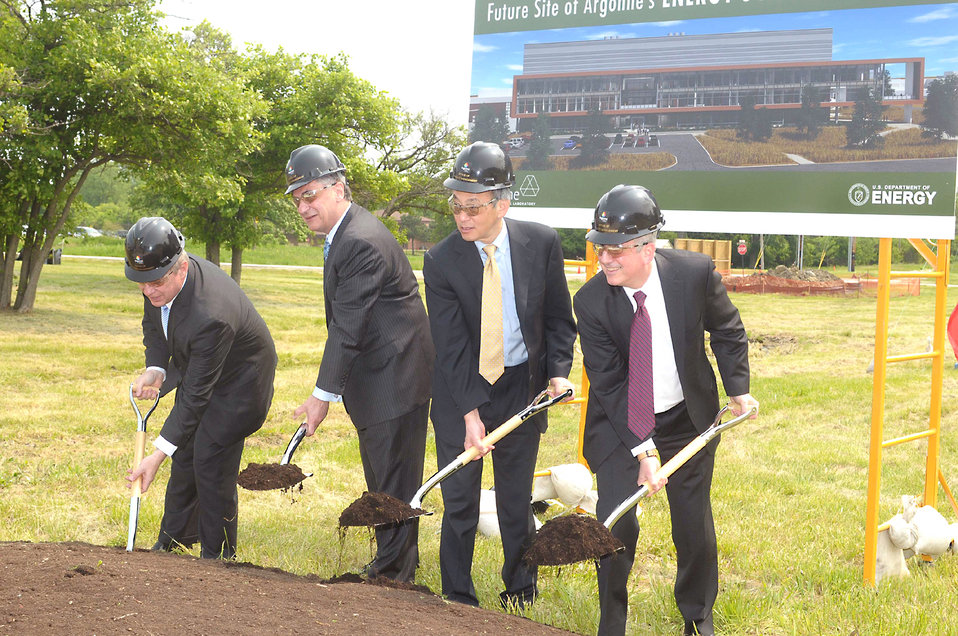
Energy Secretary Steven Chu speaks at the groundbreaking ceremony for Argonne National Laboratory's Energy Sciences Building.
The Energy Sciences building will house some 200 research personnel dedicated to addressing the world's most critical energy challenges. The facility will be key in getting our scientists and engineers to deliver on our mission; doing basic science to generate, supply, transmit, store and use new energy. The building will bring together many different scientists to collaborate and create new knowledge for this new economy. The building is scheduled to be complete in 2013.